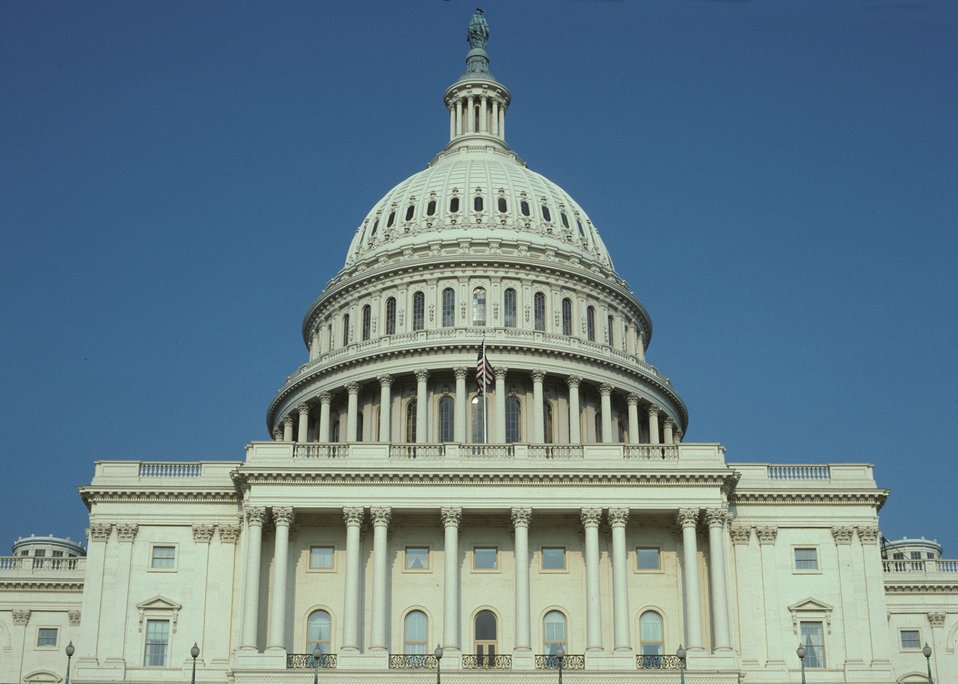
U. S. Capitol Building in Washingot DC.